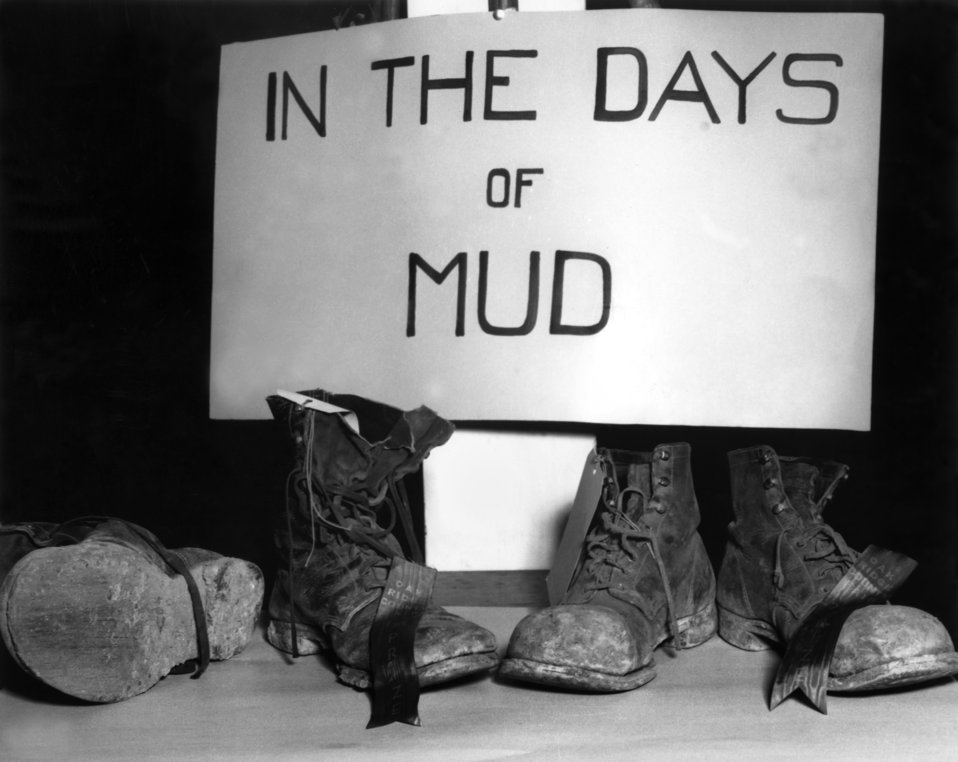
In the Days of Mud - Oak Ridge

1120 DOE photo Ed Westcott In the Days of Mud - Oak Ridge Tennessee 9/1945